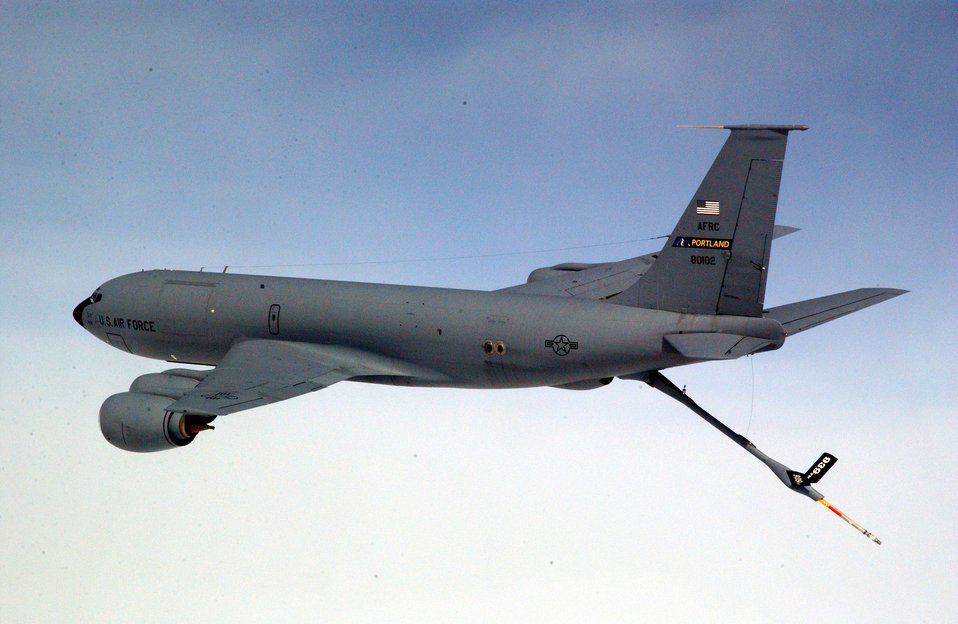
Stratotankers key players in fighting war on terrorism

KC-135 Stratotankers, like this one from the Oregon Air National Guard's 939th Air Refueling Wing in Portland, continue to be key players in fighting the war on terrorism.